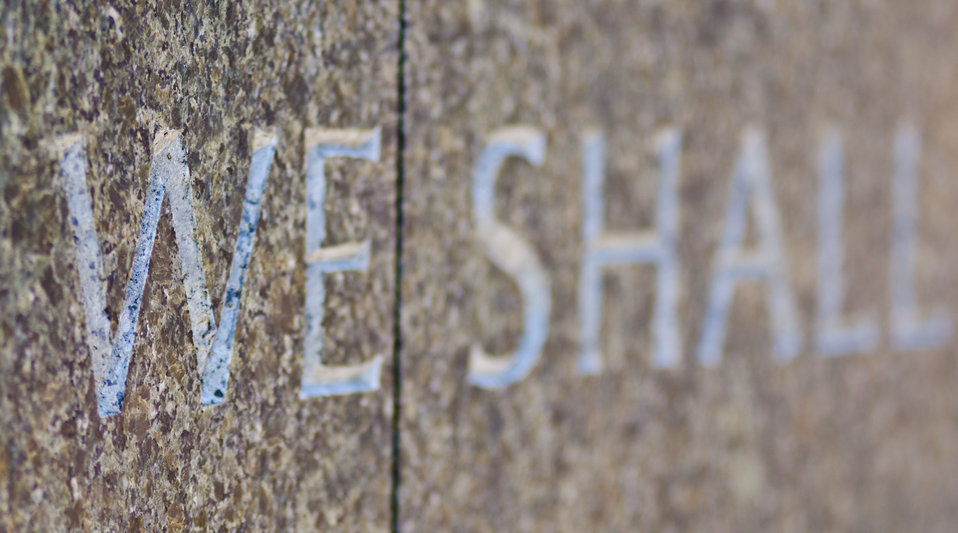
Martin Luther King, Jr. Memorial in Washington, DC, on Saturday, October 8, 2011.